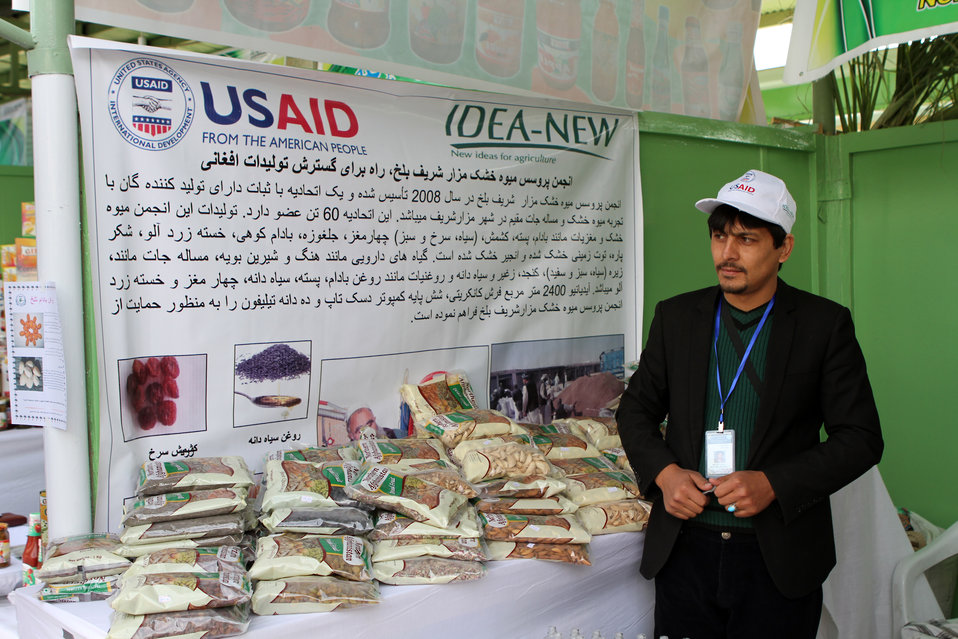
Agfair event